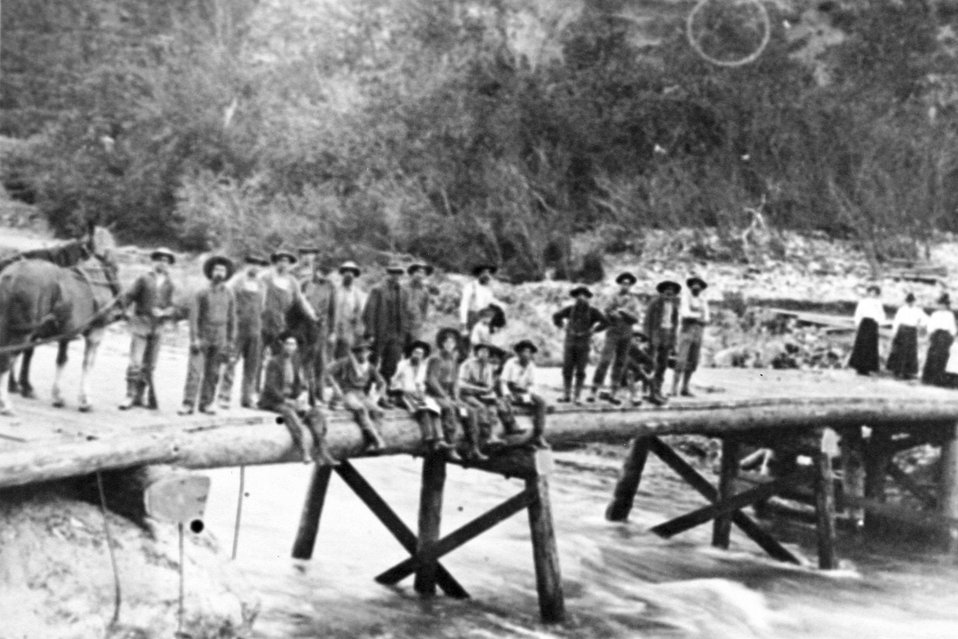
Taylor Creek Bridge at Galice C. 1905